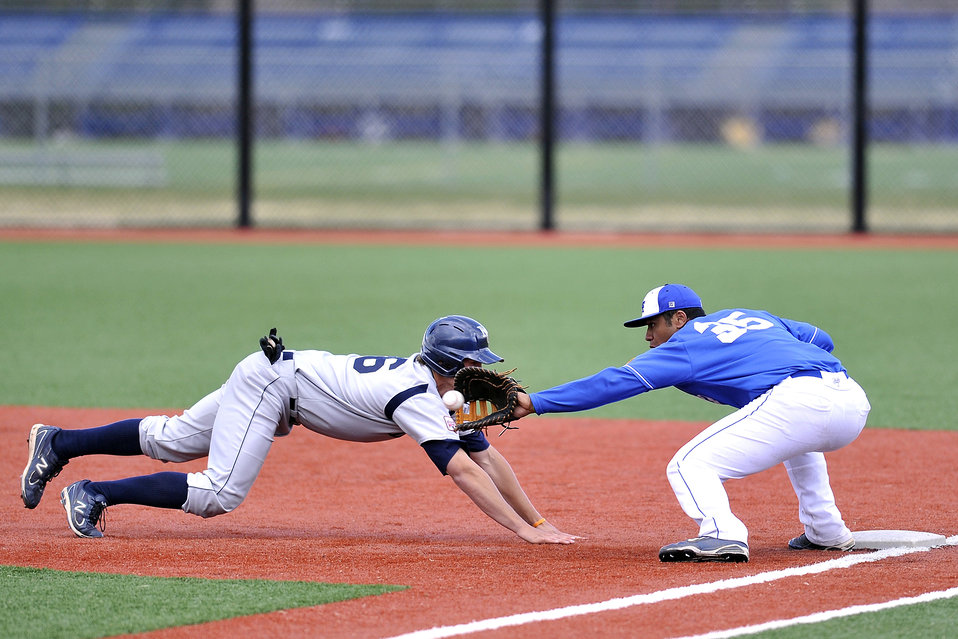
Falcons vs. Bears

Air Force Academy Falcons freshman Seth Kline picks off Northern Colorado's Ben Packard during 2nd-inning action April 19, 2011, at Falcon Field in Colorado Springs, Colo. The Bears took the lead in the top of the ninth with a two-run blast, lifting them over the Falcons 6-5.